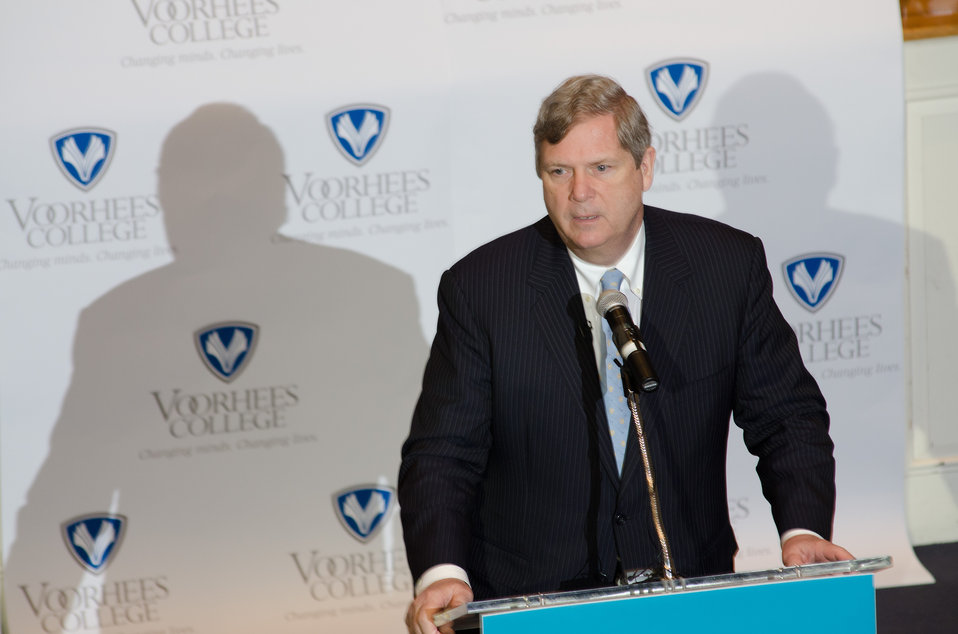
Agriculture Secretary Tom Vilsack speaks at the U.S. Department of Agriculture's (USDA) Strike Force for Rural Growth and Opportunity event held at Voorhees College in Denmark, SC, on Tuesday, March 26, 2013. The primary goal of the Strike Force initiative is to increase partnership with rural communities and leverage community resources in targeted, persistent poverty areas. Vilsack noted that through the Strike Force initiative, USDA will do more to partner with local and state governments and community organizations on projects that promote economic development and job creation.